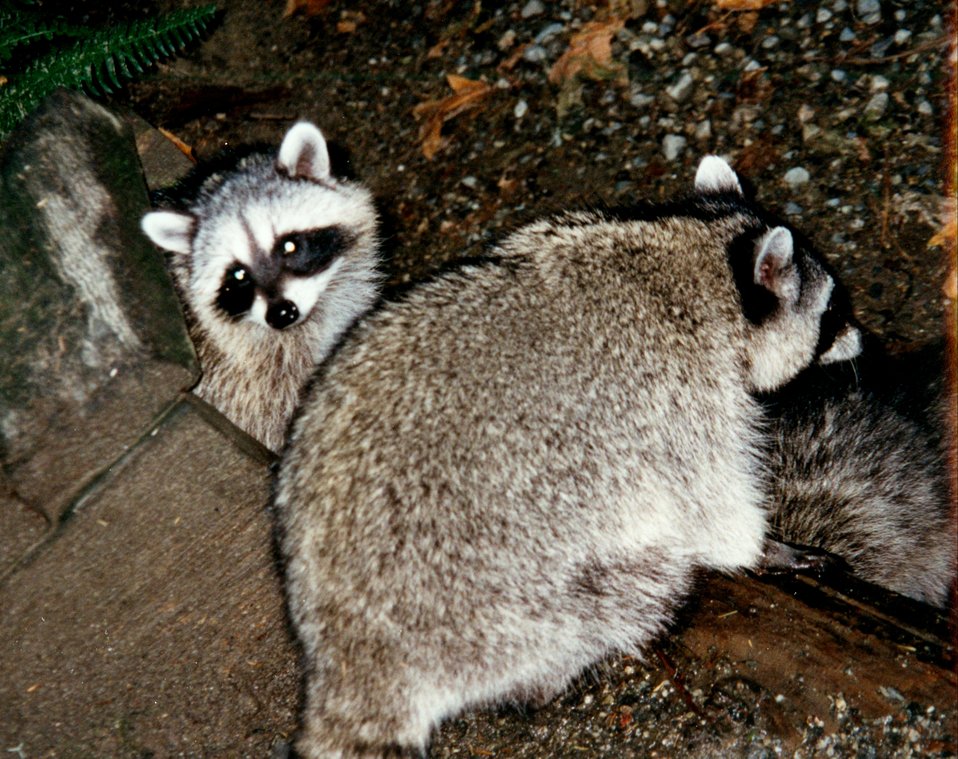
Raccoons (Procyon lotor).